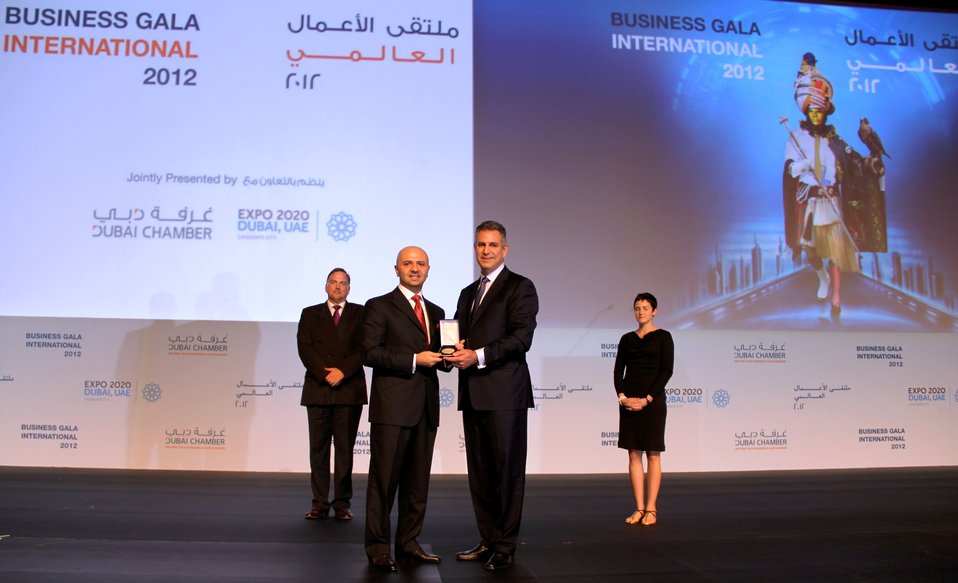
Under Secretary Sanchez With the Medal of Commerce Award Winner

Under Secretary of Commerce for International Trade Francisco J. Sanchez poses for a photo with the Medal of Commerce Award Winner at the Global Entrepreneurship Summit (GES) Gala Dinner in Dubai, United Arab Emirates, December 11, 2012.